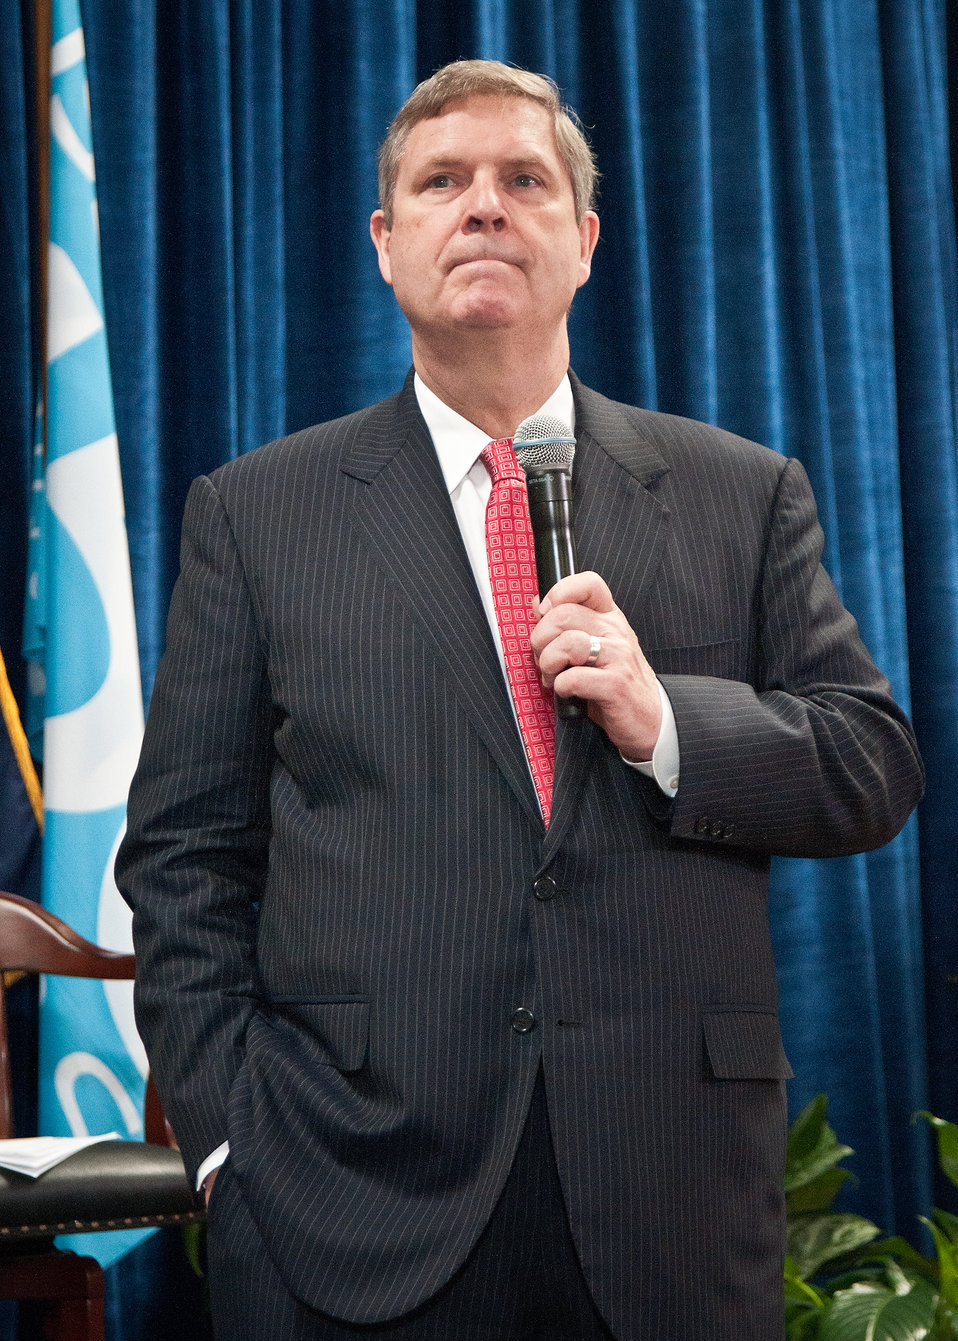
Agriculture Secretary Tom Vilsack listens to questions posed by employees during the Ask The Secretary event held in the South Building Cafeteria, in Washington, D.C., on Wednesday, March 21, 2012, gave the opportunity for USDA employees the ask questions about the Blueprint for Stronger Service Initiative and hear directly from Secretary Vilsack. This forum encouraged USDA employees to offer their ideas, voice their concerns, and gather more information on the discussions that are taking place within the USDA Administrative Solutions Project. The Blueprint for Stronger Service Initiative aims to build a modern and efficient service organization that is closely timed with technological innovations - and better suited to respond to 21st century agricultural challenges.